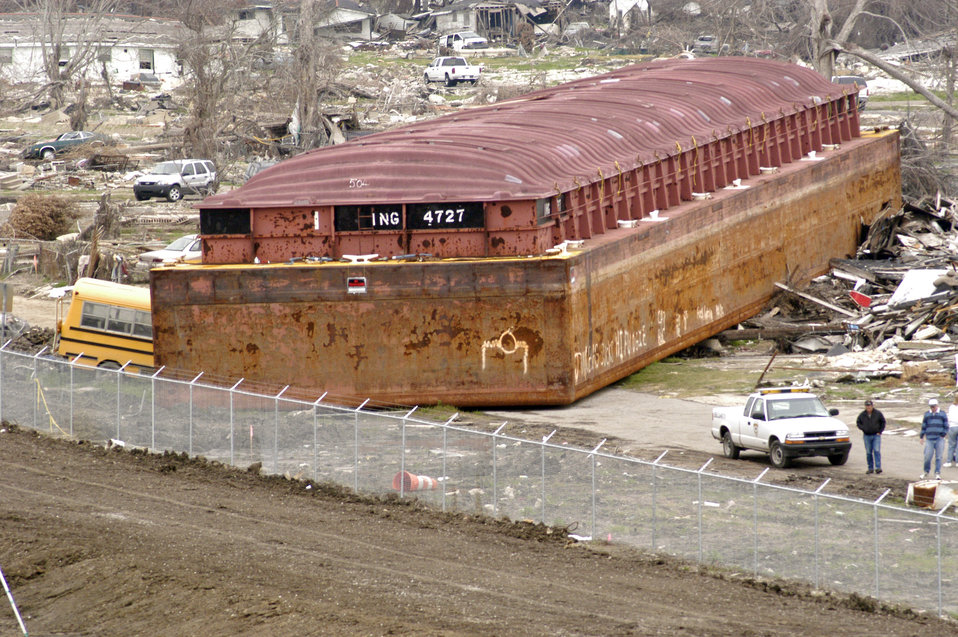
A barge breached a levee in the ninth ward in New Orleans, LA, as a result of the 20-foot storm surge from Hurricane Katrina. A small school bus was crushed under the barge as the floodwaters receded. Katrina made landfall on Monday morning, August 29, 2005 as a Category 3 hurricane with sustained winds of 125/mph with over a 20-foot storm surge. Katrina caused catastrophic damage over 90 thousand square miles across Louisiana with an estimated $75 billion dollars in damage. The total economic impact to the Gulf Coast was estimated at over $150 billion. 80% of New Orleans, LA, was underwater with some areas more than 20 feet deep. Less than a month later southern Louisiana was struck by a second Category 3 hurricane Rita inflicting more damage in the southwestern areas of Louisiana adding an addition $12 billion worth of damage to the already beleaguered state. The U.S. Army Corps of Engineers (USACE) under the auspices of Federal Emergency Management Agency (FEMA) was the lead service in providing assistance to the citizens of Louisiana. The U.S. Department of Agriculture (USDA) supplied emergency food aid, emergency loan assistance to farmers and home owners, and USDA personnel from around the nation volunteered their time and muscle to aid in the recovery operations.